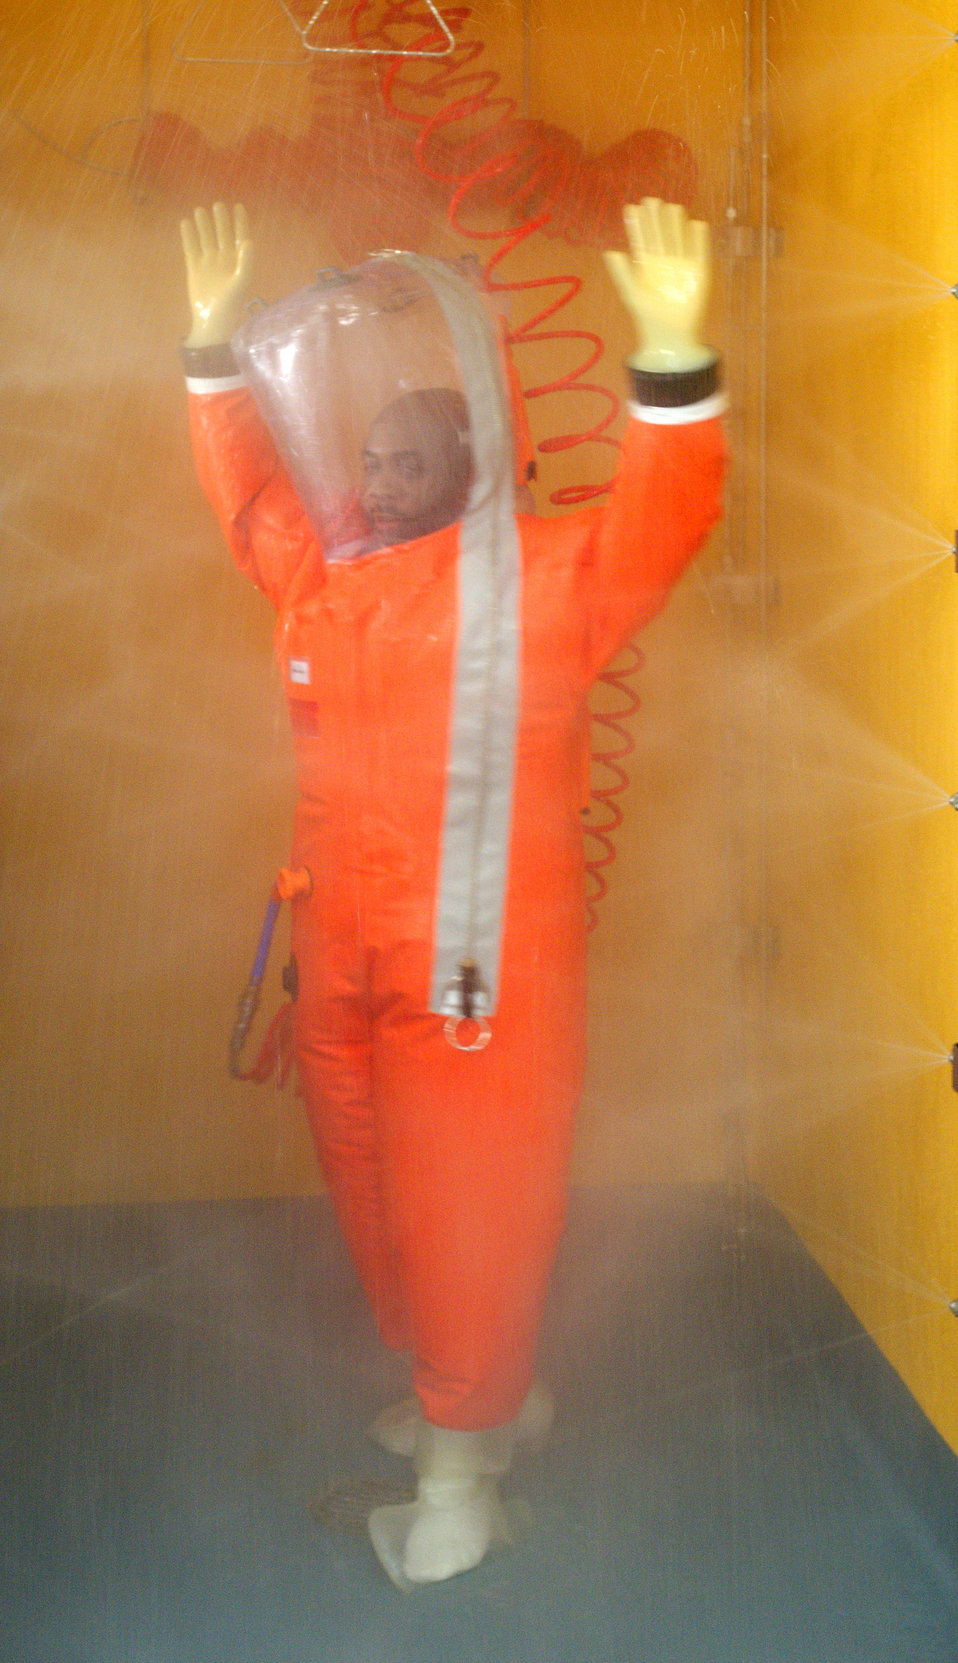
In this 2007 image, a Centers for Disease Control microbiologist was showering inside a Biosafety Level 4 (BSL-4) laboratory decontamination booth, prior to exiting the sealed confines of the BSL-4 lab. The process consists of a 4 minute, 5% Microchem wash, which is followed by a 3 minute rinse with water. See PHIL 10729 for another view of this activity.